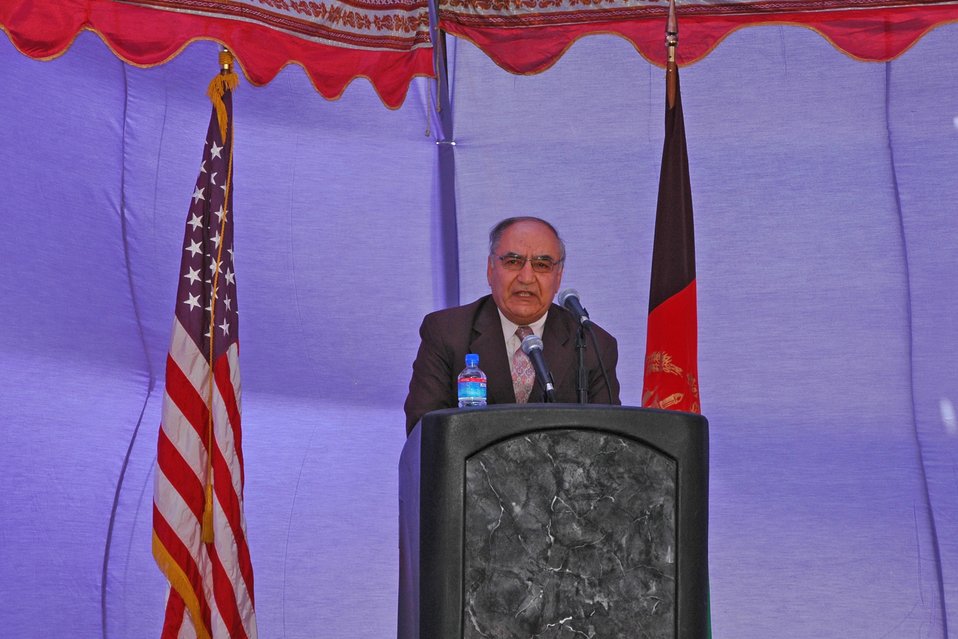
105 MW Tarakhil Power Plant Handover